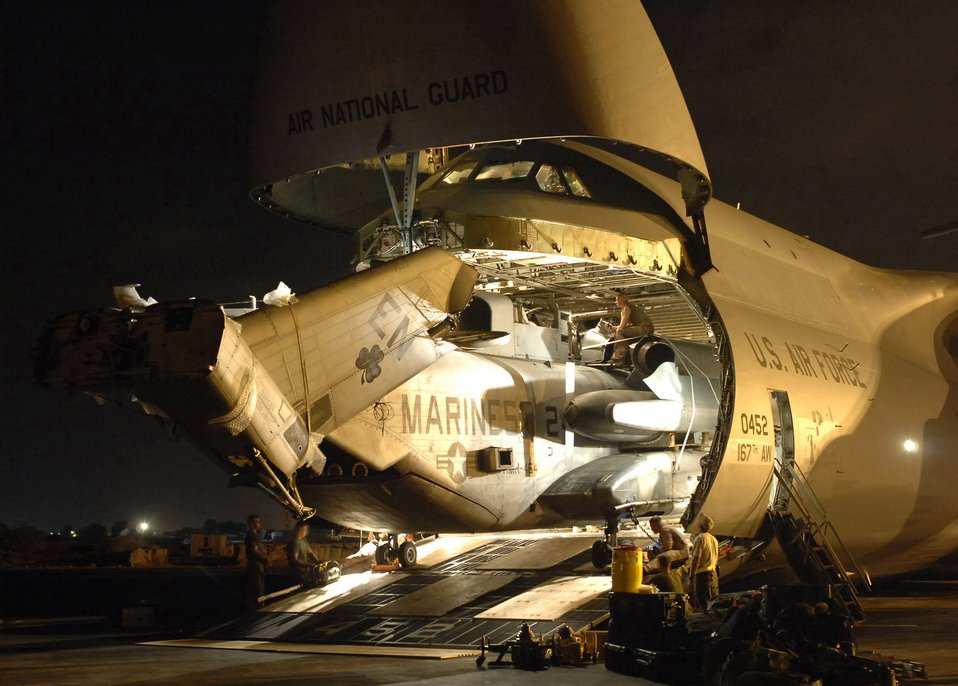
Special delivery

Crewmembers remove a Marine CH-53E Super Stallion helicopter from a C-5 Galaxy in Djibouti, Africa, April 10. The Galaxy's overseas journey was a first for the West Virginia Air National Guard's 167th Airlift Wing.